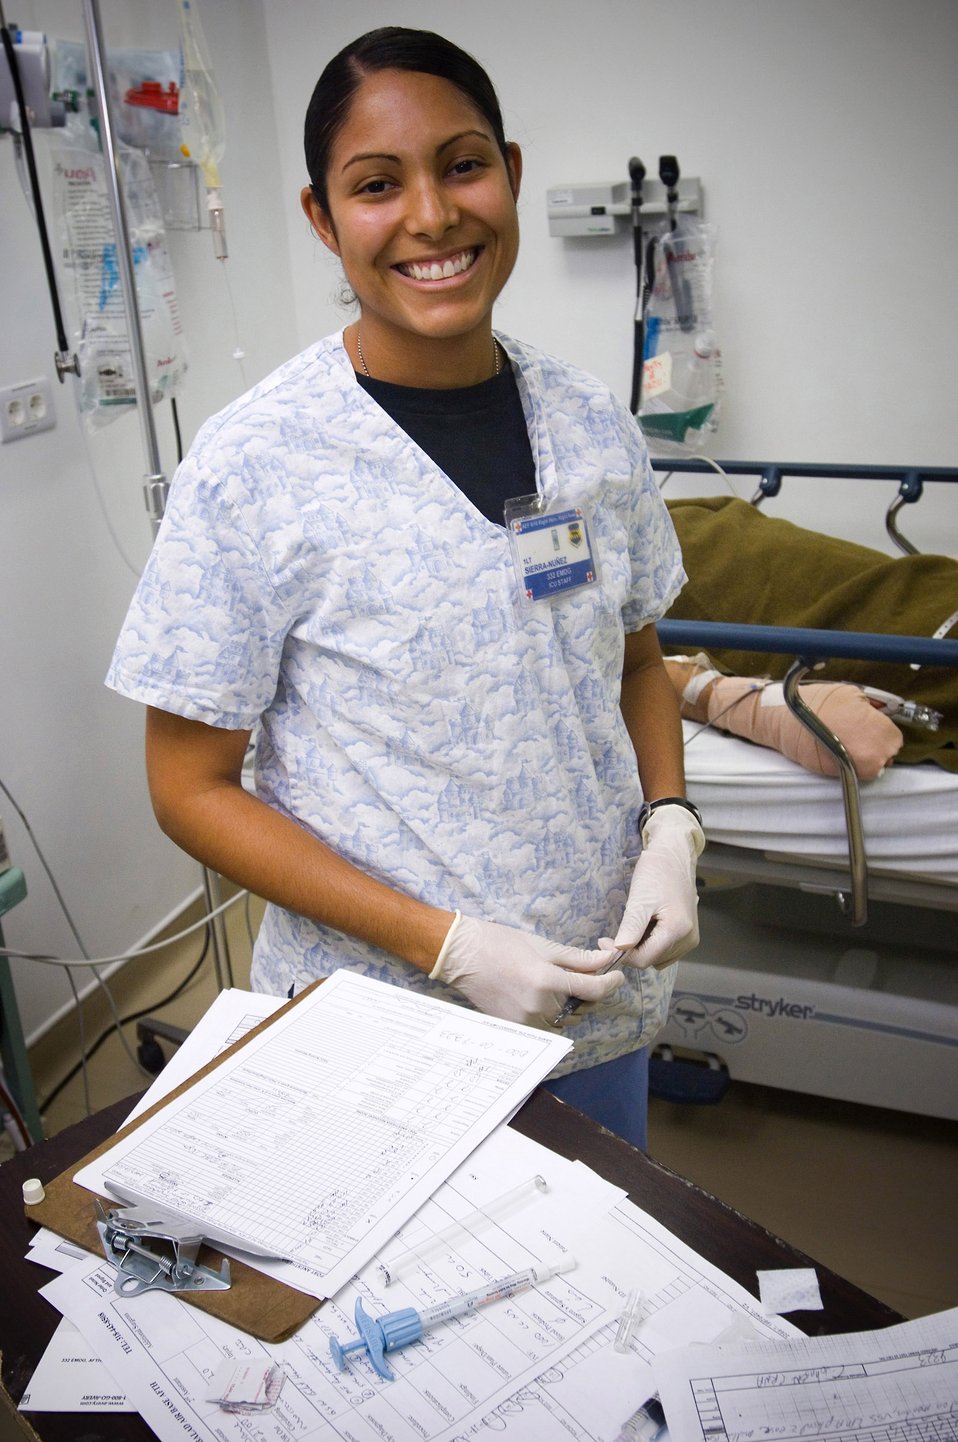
Combat Nurses: The ICU

1st Lt. Johana Sierra-Nunez shares a sunny smile with the critically-injured patients she cares for in the Air Force Theater Hospital at Balad Air Base, Iraq. The lieutenant was a member of the medical team that cared for ABC news reporter Bob Woodruff, who was injuried while reporting on the war in Iraq. Lieutenant Sierra-Nunez is an intensive care unit nurse deployed from Lackland Air Force Base, Texas.